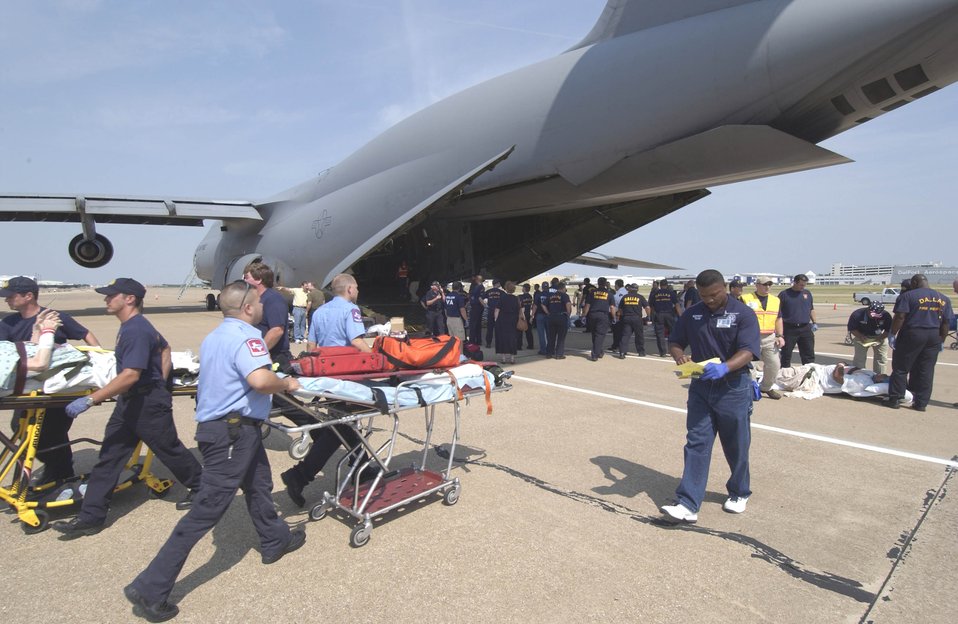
Before the storm

DALLAS -- Hospital patients from Beaumont, Texas, are taken off a C-5 Galaxy Sept. 23 en route to one of the many medical facilities set up to care for evacuees from the path of Hurricane Rita. The aircraft is from the from the 21st Airlift Squadron, Travis Air Force Base, Calif. The U.S. Air Force is contributing to the Hurricane Rita humanitarian assistance operations being led by the Federal Emergency Management Agency in conjunction with the Department of Defense.